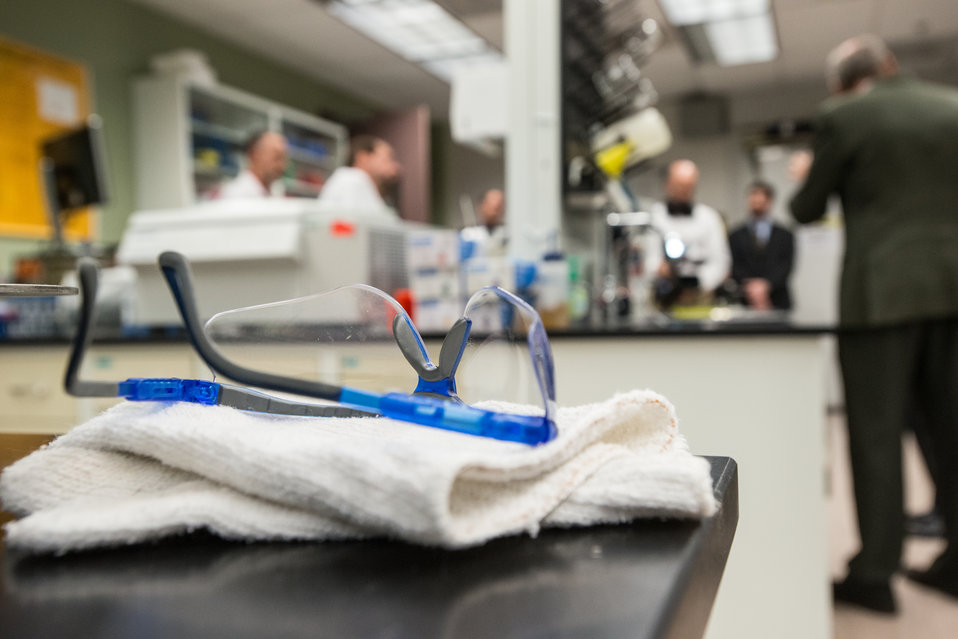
Safety equipment such as eye protection is necessary for personal protection when using liquid nitrogen to begin the essential, safe cryogenic freezing process of samples that will be stored at -196 °C (-321 °F) in liquid storage and -193 C. (-315 °F) in vapor storage, at the U.S. Department of Agriculture (USDA) Agriculture Research Service (ARS) National Center for Genetic Resources Preservation (NCGRP), in Ft. Collins, CO, on Wednesday, Nov. 6, 2013.